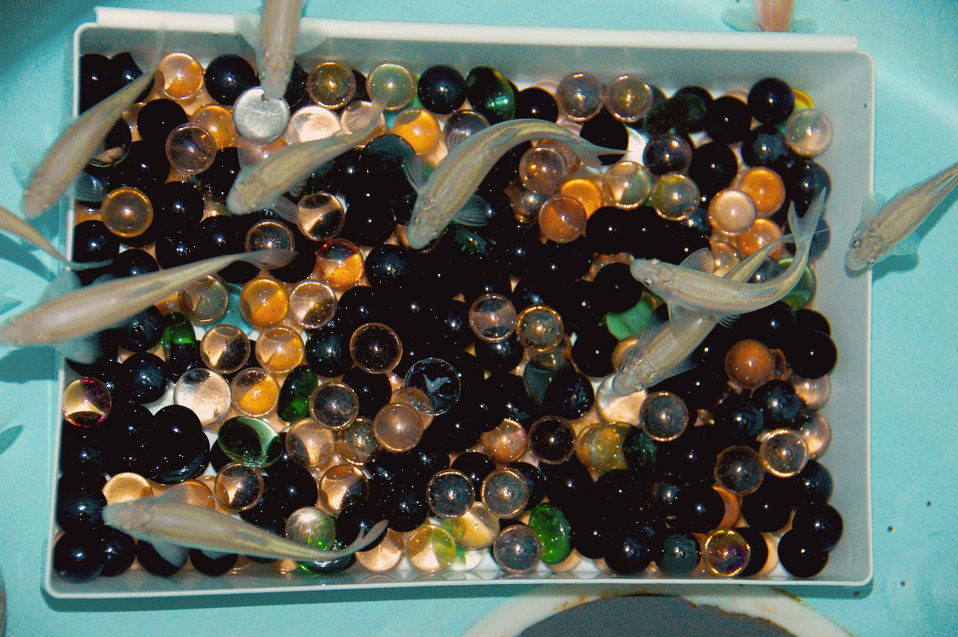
Woundfin are an Endangered Species that are native to much of the lower Colorado River Basin. If you are interested in learning more visit; www.fws.gov/nevada/protected species/fish/species/woundfi...